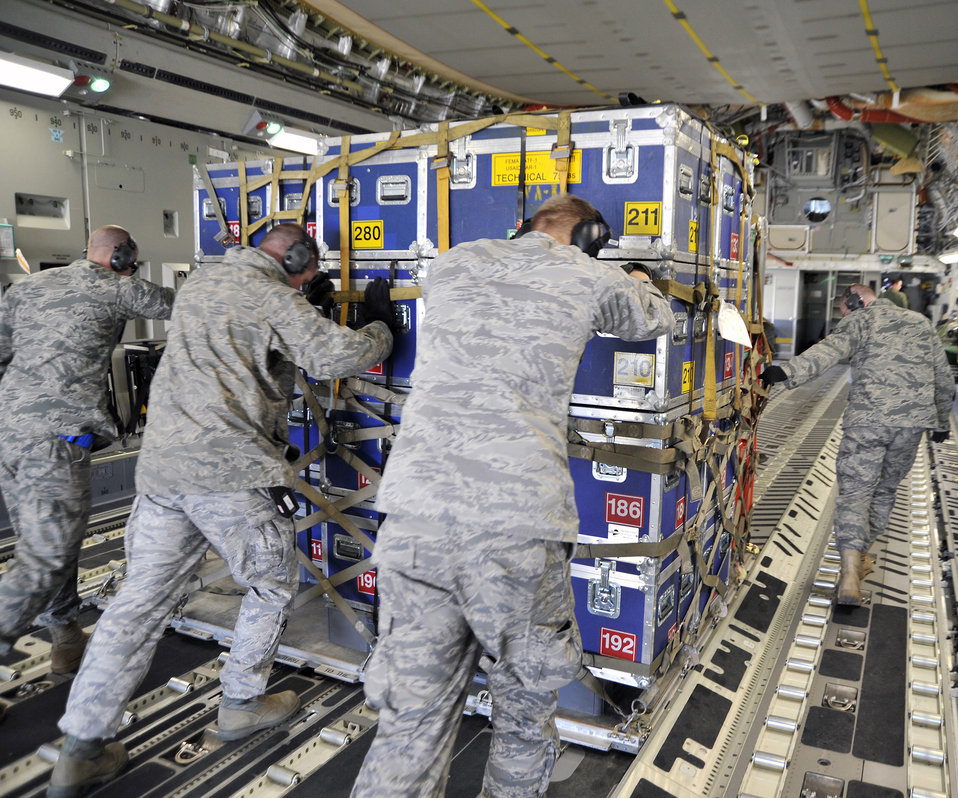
Japan Earthquake Relief

Airmen from the 89th Aerial Port Squadron load pallets onto a C-17 Globemaster III on March 12, 2011, at Joint Base Andrews, Md. Air transportation Airmen from the 89th APS created 14 pallets of technical search and rescue gear, to include inflatable swift-water rescue boats, generators, trench rescue and cutting equipment. The gear is being transported by C-17 to more than 80 Fairfax County Urban Search and Rescue technicians, to provide assistance in the rescue effort after an earthquake and tsunami hit japan on March 11.